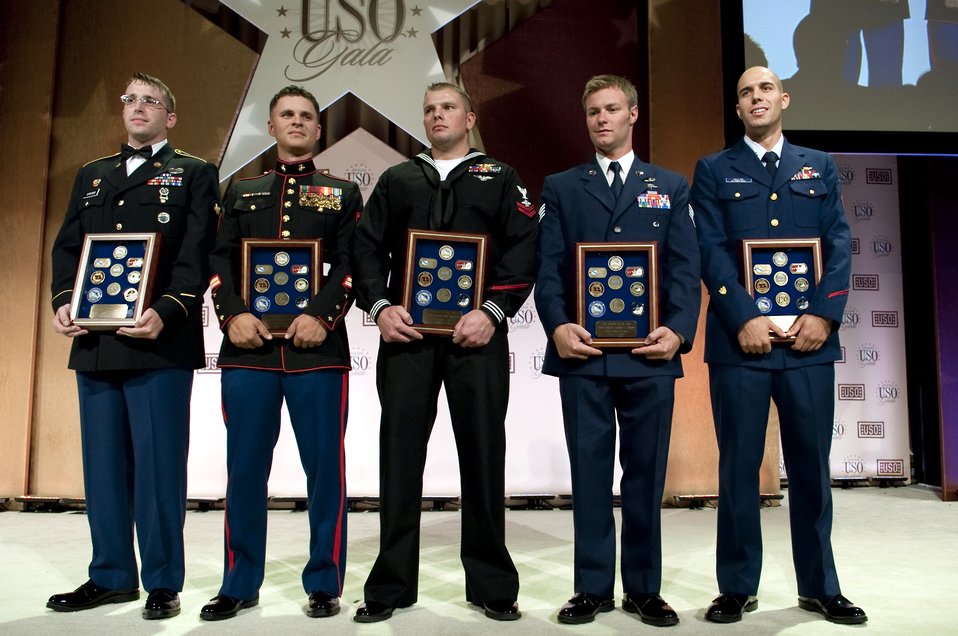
USO gala honors troops, sacrifices

Army Spc. Michael D. Carter, Marine Sgt. Mark A. Robinson, Navy Petty Officer 2nd Class William S. Stevens, Staff Sgt. Zachary J. Rhyner and Coast Guard Petty Officer 2nd Class Abram H. Heller display the awards they received as Servicemembers of the Year for their individual branches Oct. 7, 2009, at the 2009 USO Gala held in Washington, D.C.